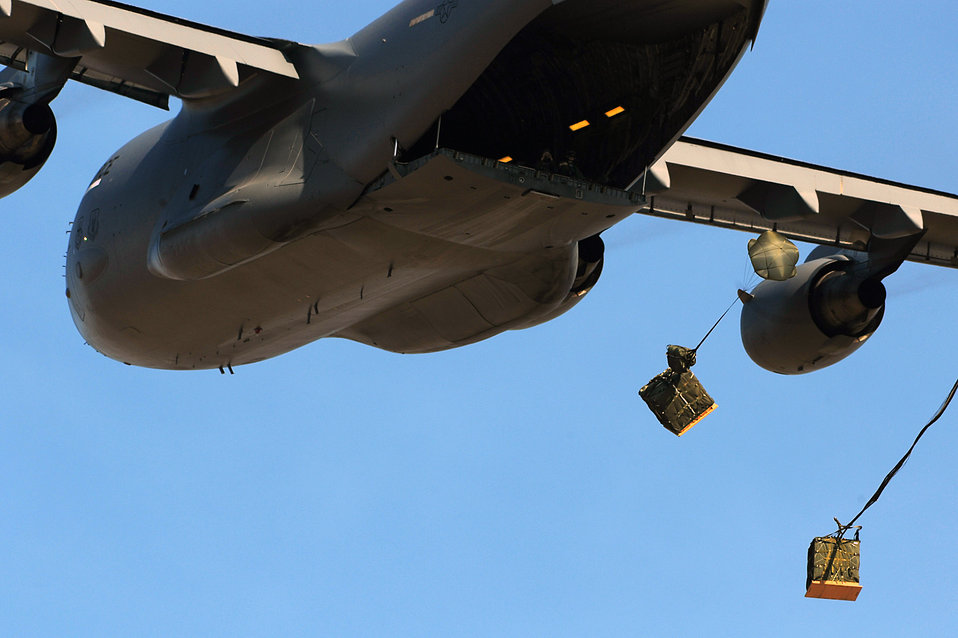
Show of force

C-17 Globemaster IIIs from the 437th and 315th airlift wings drop cargo at a remote airfield during a strategic brigade airdrop exercise involving a 13-ship formation Dec. 18 from Charleston Air Force Base, S.C. C-17s must be able to meet the Army's goal of airdropping a brigade's worth of troops and equipment (about 3,250 Soldiers and 3,450 tons of equipment). Charleston AFB aircraft currently account for half of the Air Force strategic brigade airdrop requirement.